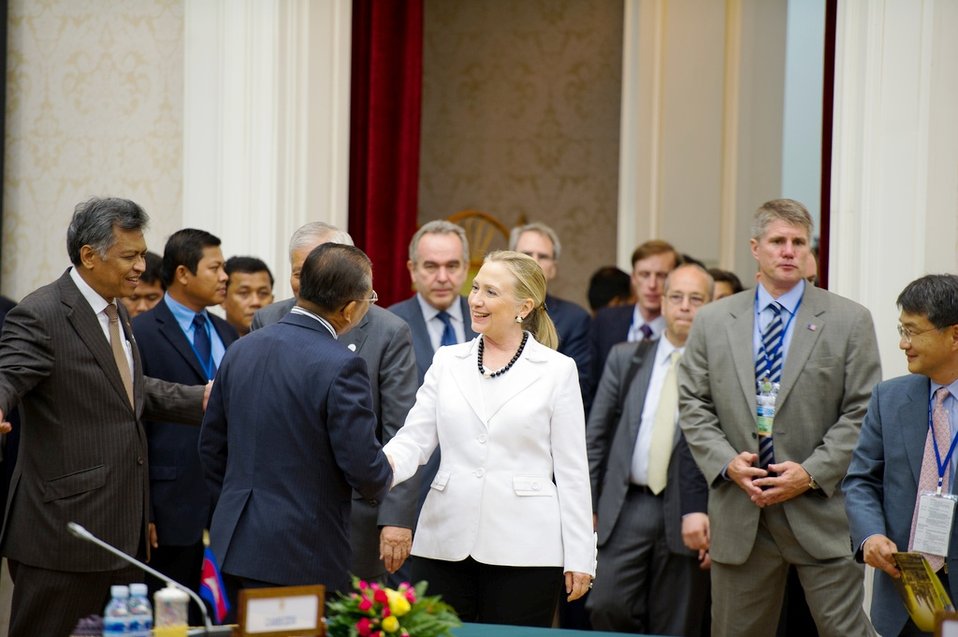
Secretary Clinton Shakes Hands With Philippines' Secretary of Foreign Affairs Albert Ferreros del Rosario

U.S. Secretary of State Hillary Rodham Clinton shakes hands with Philippines' Secretary of Foreign Affairs Albert Ferreros del Rosario before the U.S.-ASEAN Ministerial Meeting in Phnom Penh, Cambodia, on July 11, 2012.